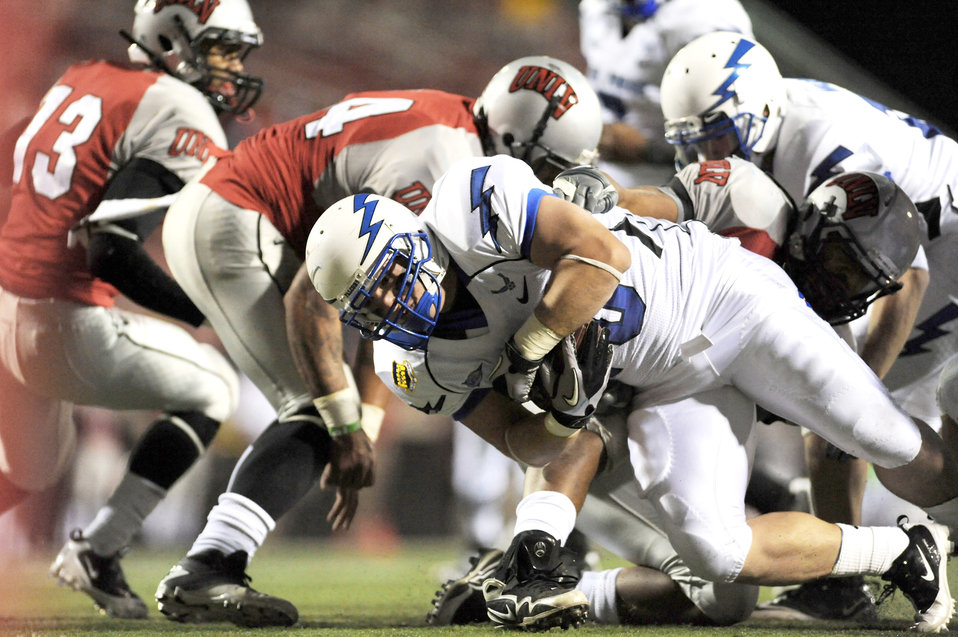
USAFA vs UNLV

Air Force running back Ryan Southworth dives for yardage during the Falcons' game against the University of Nevada, Las Vegas Nov. 18, 2010, in Las Vegas. Southworth had five rushes for 18 yards in the Falcons' 35-20 victory over the Rebels.